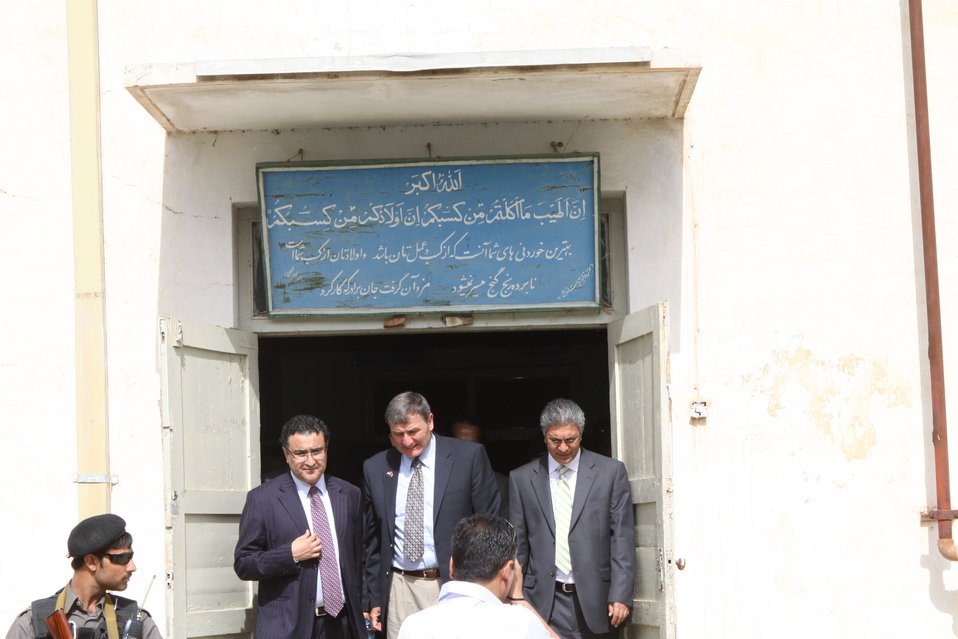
100525 Hirat Textile Company 778